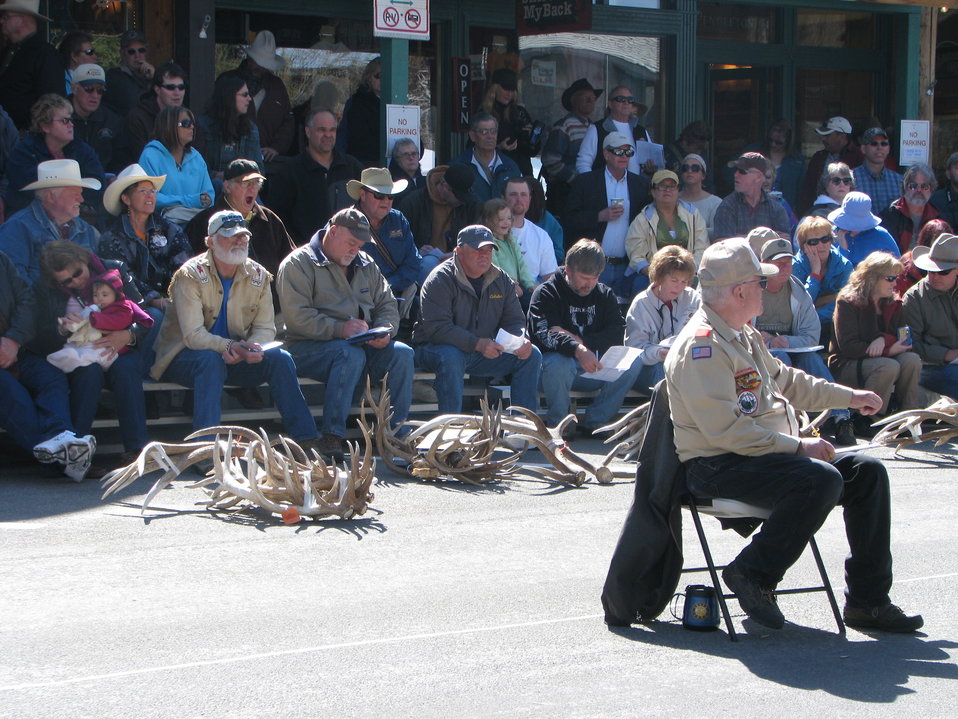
Bidders and Spectators Fill the Stands

A Scout leader assists the auctioneer by seating himself close to the crowd to watch for bidders signaling their interest. In addition to bidders, the stands are usually full of spectators there to enjoy the festivities.